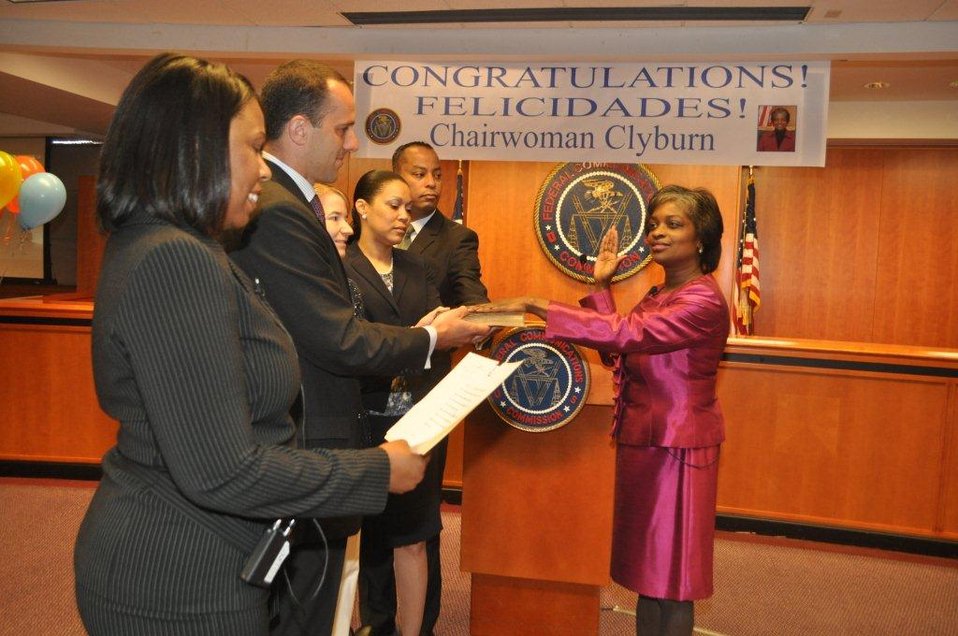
Witness the historic moment, as FCC Secretary Marlene Dortch swears in Mignon Clyburn, as 1st Acting Chairwoman of FCC